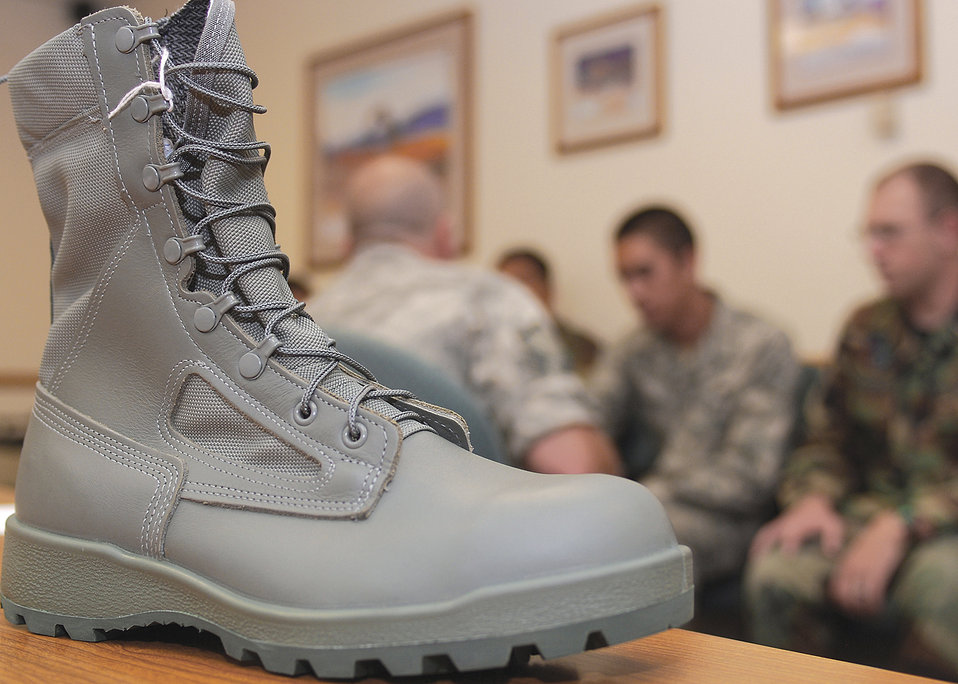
Luke Airmen to test new stain resistant footwear

The new airman battle uniform boot sits on display while Airmen are fitted as part of the test group June 10 at Luke Air Force Base, Ariz.